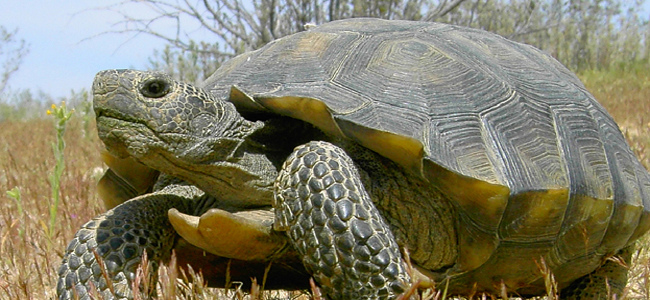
Desert tortoise

Threatened species desert tortoise (Gopherus agassizii) in Nevada